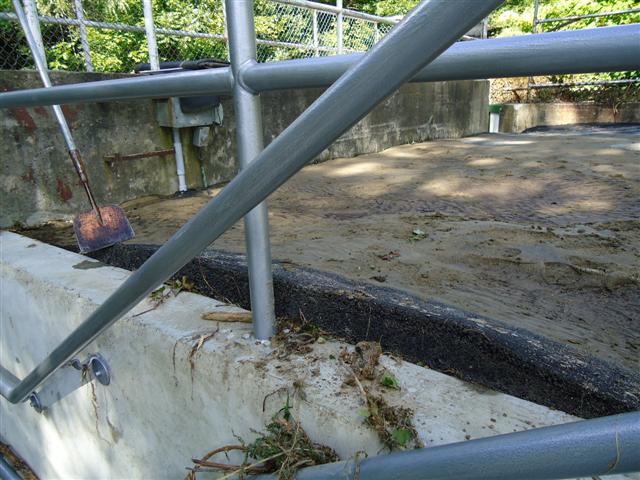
Storm damage at Eisenhower National Fish Hatchery in Vermont

Pavement buckling at water intake.